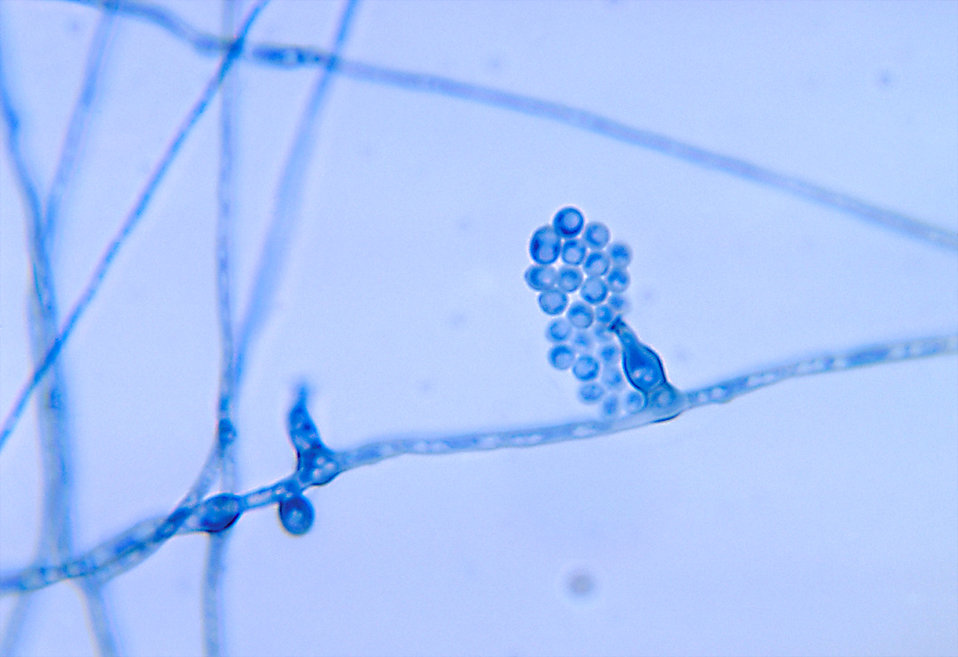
This photomicrograph shows a terminal phialide with conidia of Exophiala jeanselmei, a cause of phaeohyphomycosis.